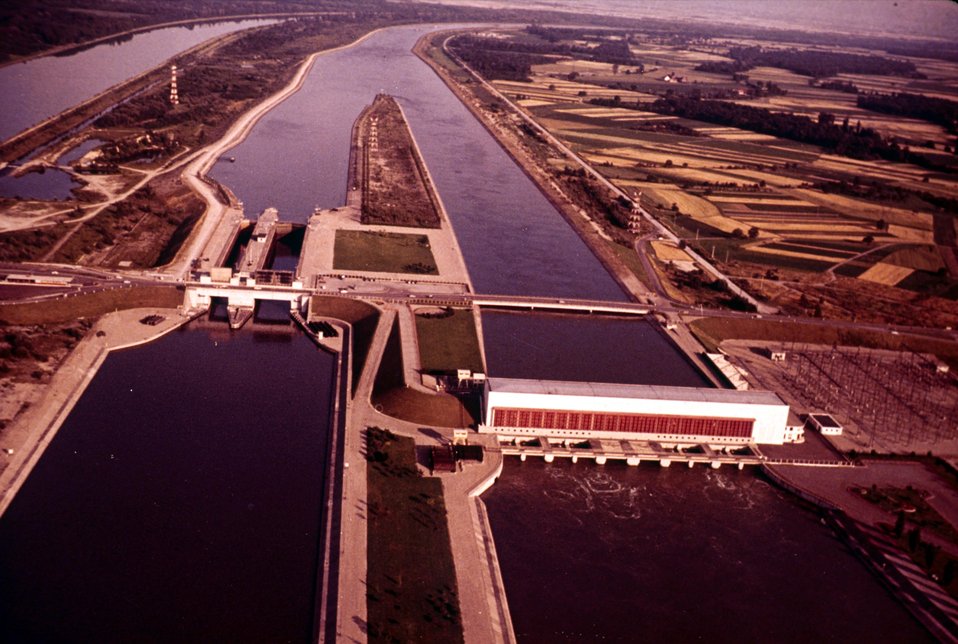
Une centrale au fil de l'eau.